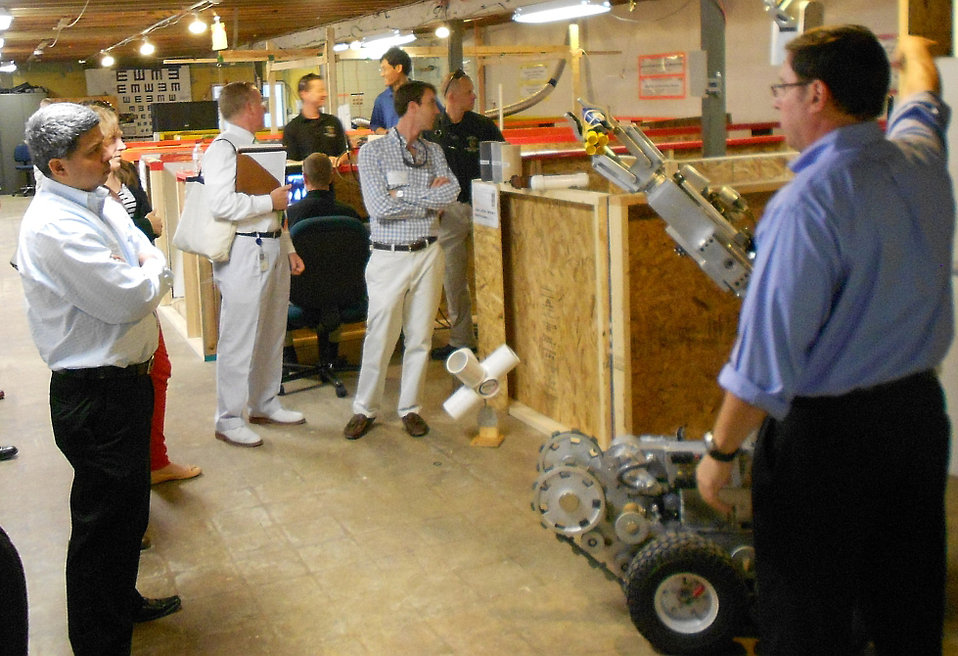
Congressional Staff Tour

Adam Jacoff (far right) of the Intelligent Systems Division in NIST’s Engineering Laboratory explains standard test methods for emergency response robots to a tour of congressional staff members of the Homeland Security Dialogue Forum.